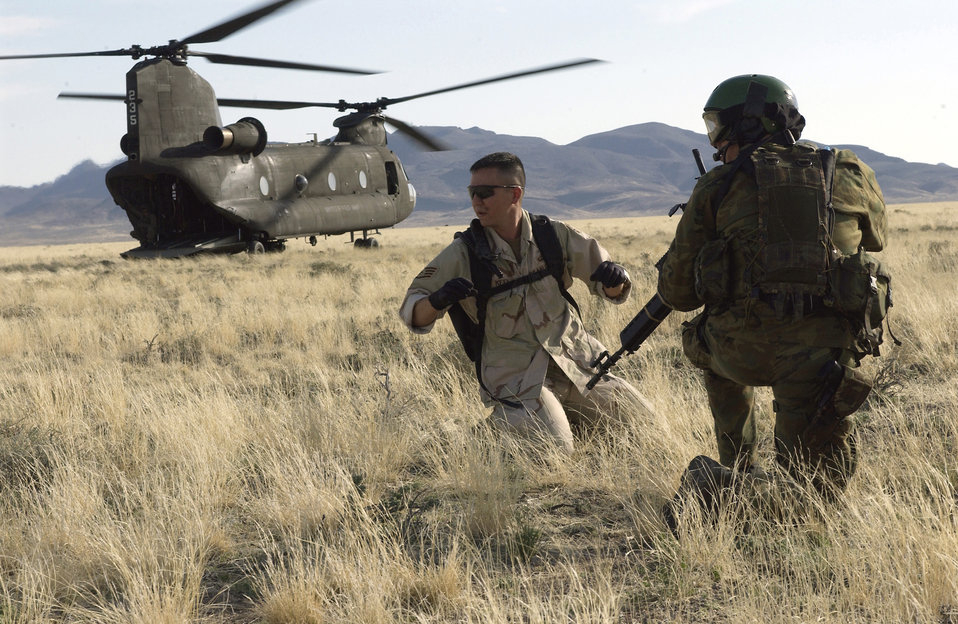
Got ya!

NELLIS AIR FORCE BASE, Nev. -- Air Force Staff Sgt. Christopher Keel is detained by a Spanish Special Forces member until his identity is confirmed during a Red Flag combat search and rescue exercise here March 23. Staff Sgt. Keelis is a survival evasion resistance and escape instructor with the 22nd Training Squadron at Fairchild Air Force Base, Wash. Red Flag is a realistic combat-training exercise involving the armed forces of the United States and its allies.